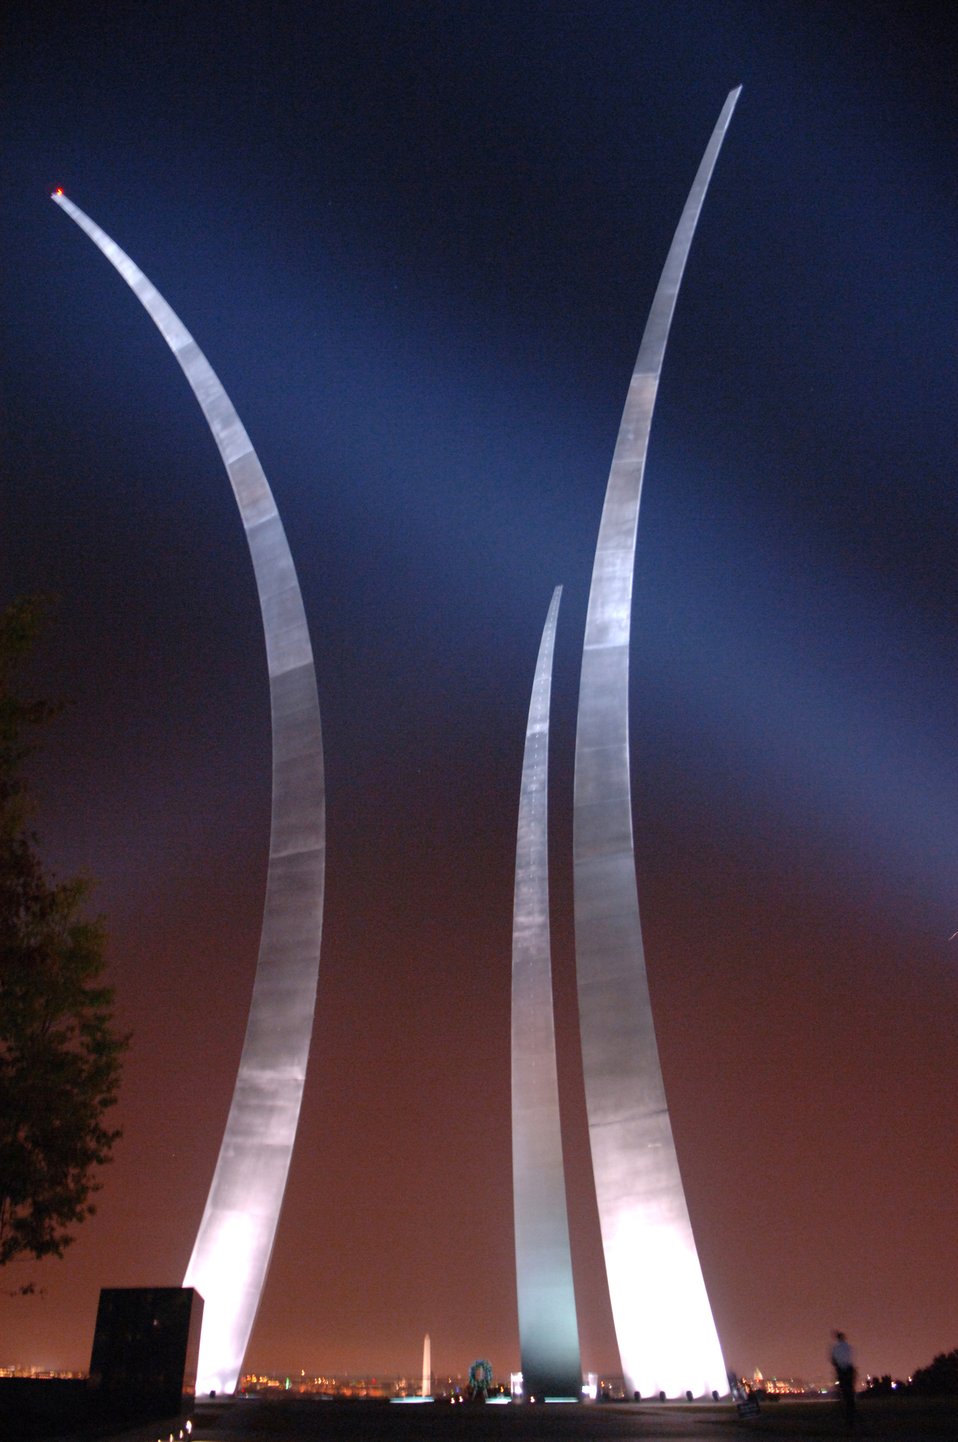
AF Memorial

The Air Force Memorial spires soar toward the night sky, the lights of nearby Washington D.C. glowing in the background. Designed by the late James Ingo Freed, the memorial pays tribute to and honors the patriotic men and women of the U.S. Air Force and its predecessor organizations.